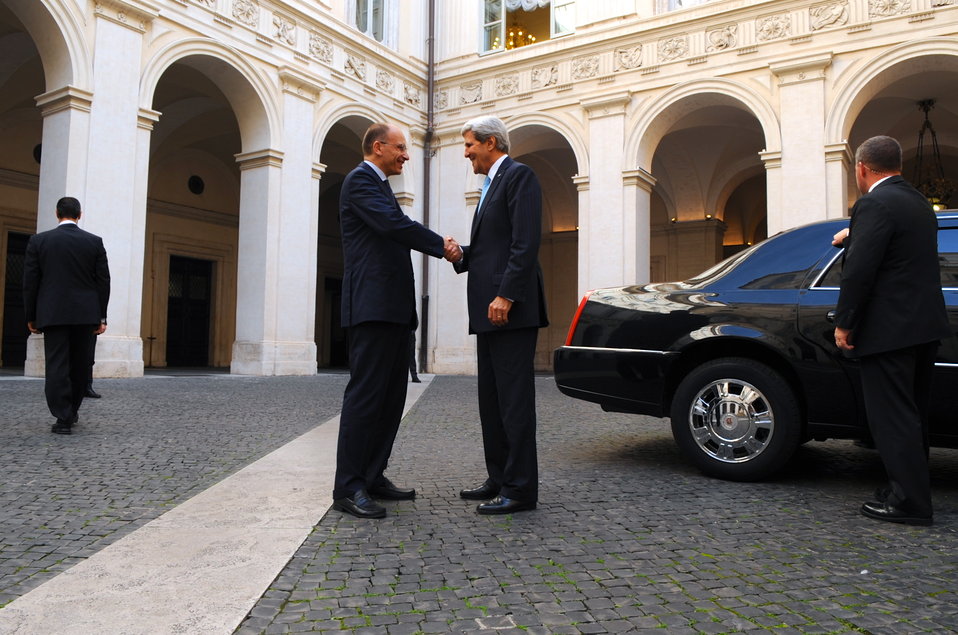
Italian Prime Minister Letta Bids Farewell To Secretary Kerry

Italian Prime Minister Enrico Letta bids farewell to U.S. Secretary of State John Kerry after a meeting in Rome, Italy on October 23, 2013.